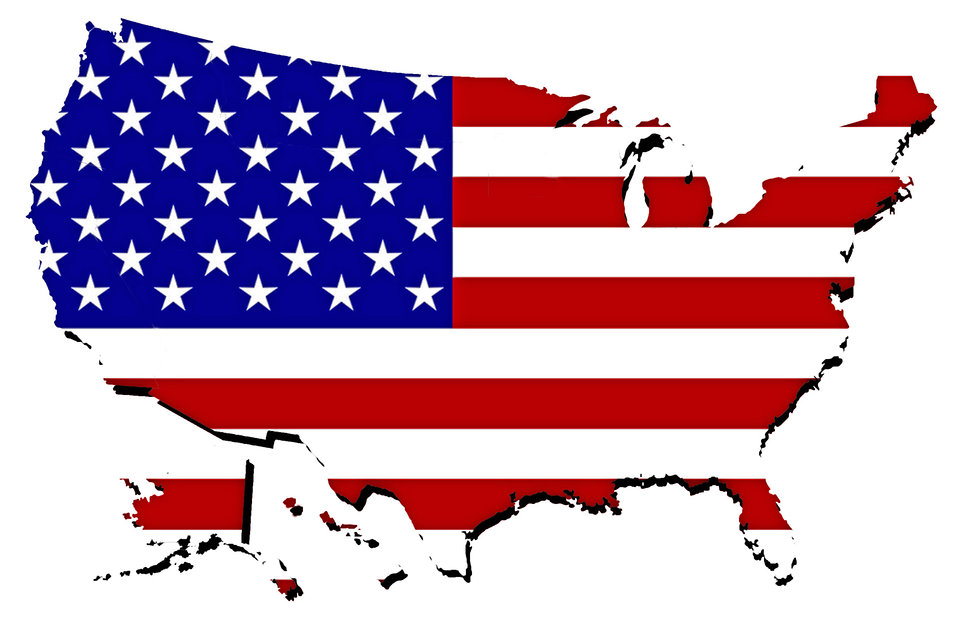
United states map with flag on the white background.